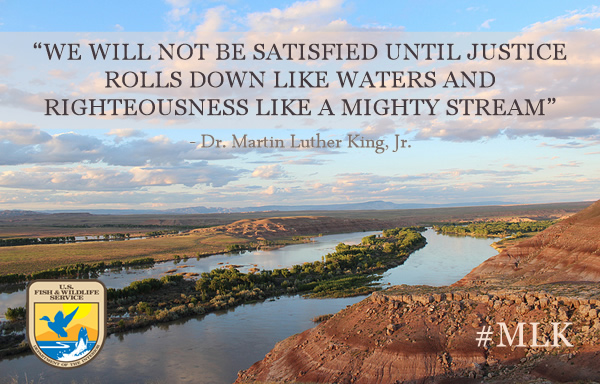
#DreamDay

Sunset overlooking The Green River at Ouray National Wildlife Refuge. Layout done for 8/28/13 #DreamDay celebration.